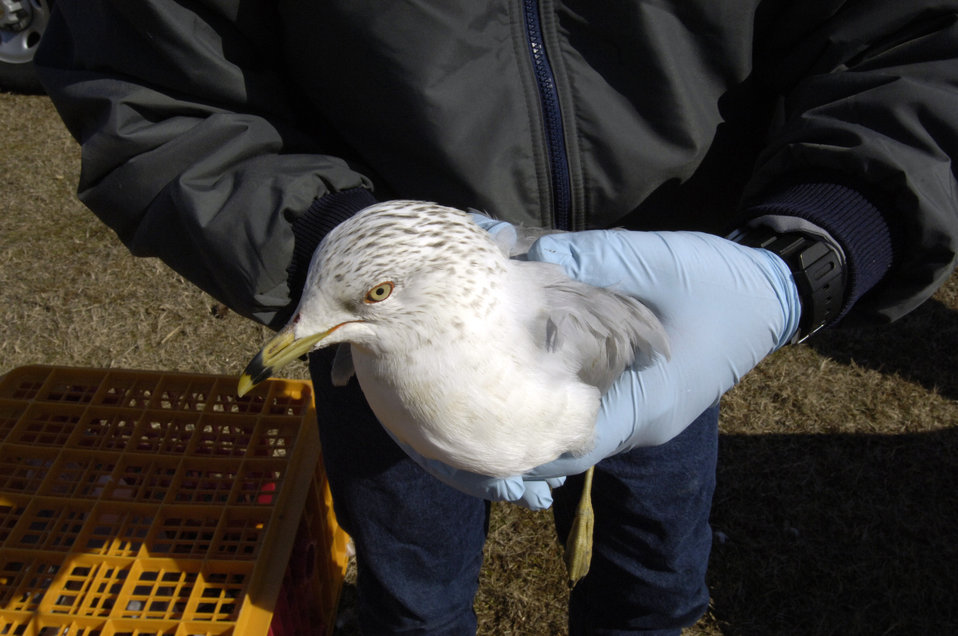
U. S. Department of Agriculture (USDA) Animal and Plant Health Inspection Service (APHIS) personnel humanely capture wild birds in Annapolis, Maryland on February 21, 2006 and test them for the Avian Influenza (AI) virus.